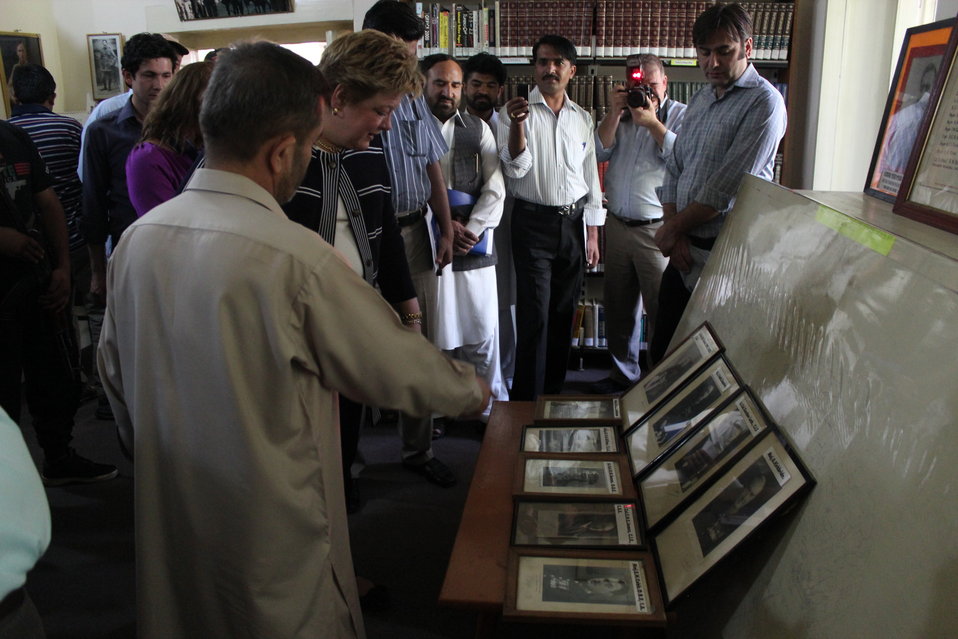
Deputy Director Karen Freeman’s visit to Gilgit Library

Karen Freeman visited the Municipal Gilgit Library on Monday, July 9. She was accompanied by other USAID staff and the staff from the Ambassador’s Fund Program. A the library, she met with Deputy Commissioner of Gilgit, Mr. Arqam and library staff, toured a photo display, and had an informal discussion with the library staff and community members about the USAID-funded project. Library staff showed the equipment funded by USAID (computers, internet, scanners, etc). The visit concluded by a Q & A session with media.